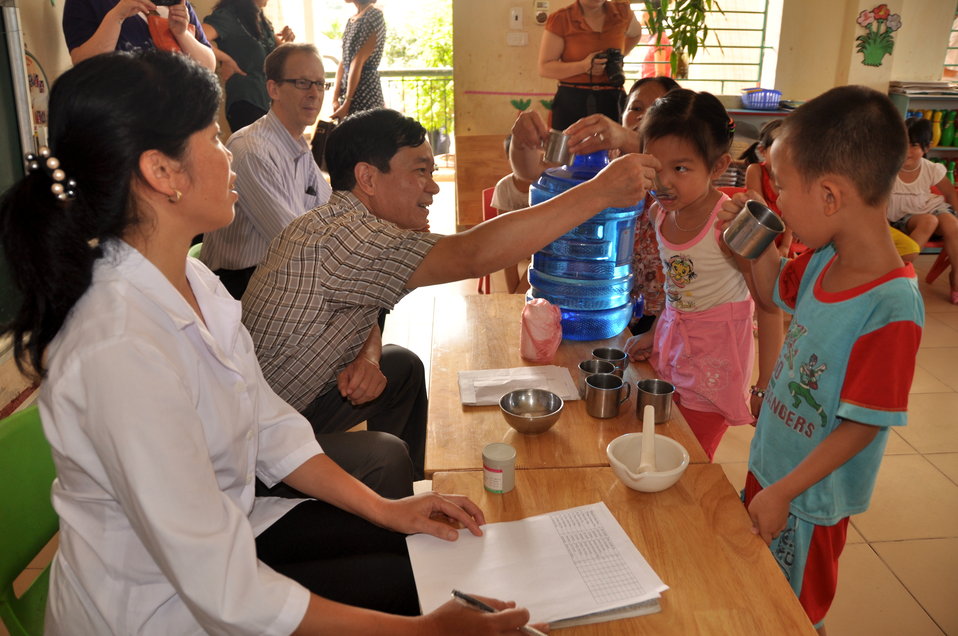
USAID Delivers Deworming Medication to Kindergartners in Nam Dinh Province

Children of Vietnam's Nam Dinh Province receive deworming medicine in a program supported by USAID and World Vision Australia.
June 1, 2013